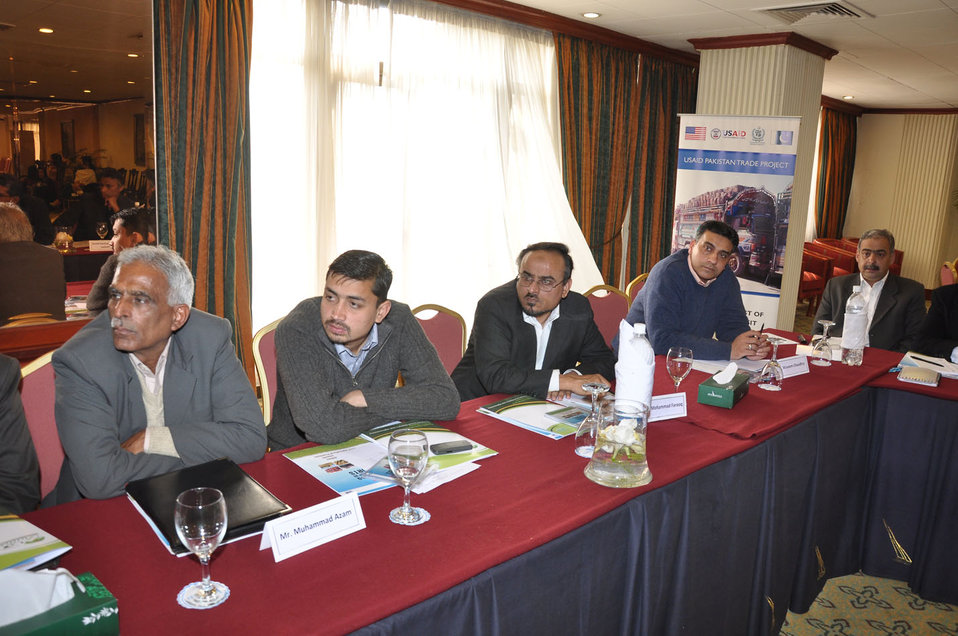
Participants of the AG workshop organized by USAID Trade Project.